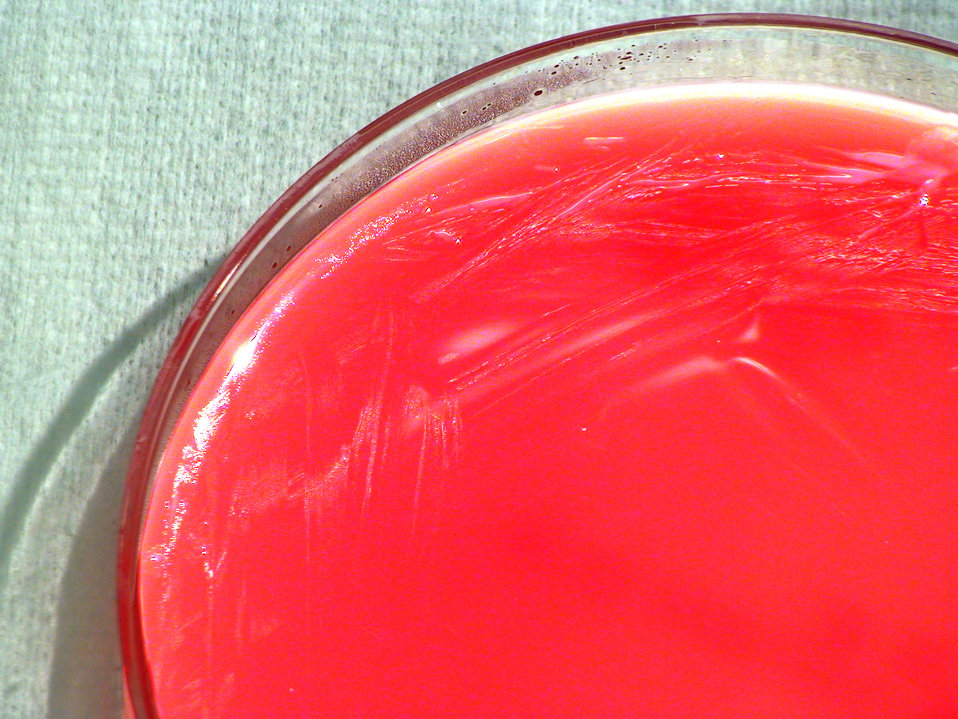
This photograph depicts the colonial morphology displayed by Gram-negative Brucella suis bacteria, which was grown on a medium of sheep's blood agar, for a 72 hour time period, at a temperature of 37�C. Brucella spp. bacteria are pathogenic towards humans, and cause a disease known as brucellosis.